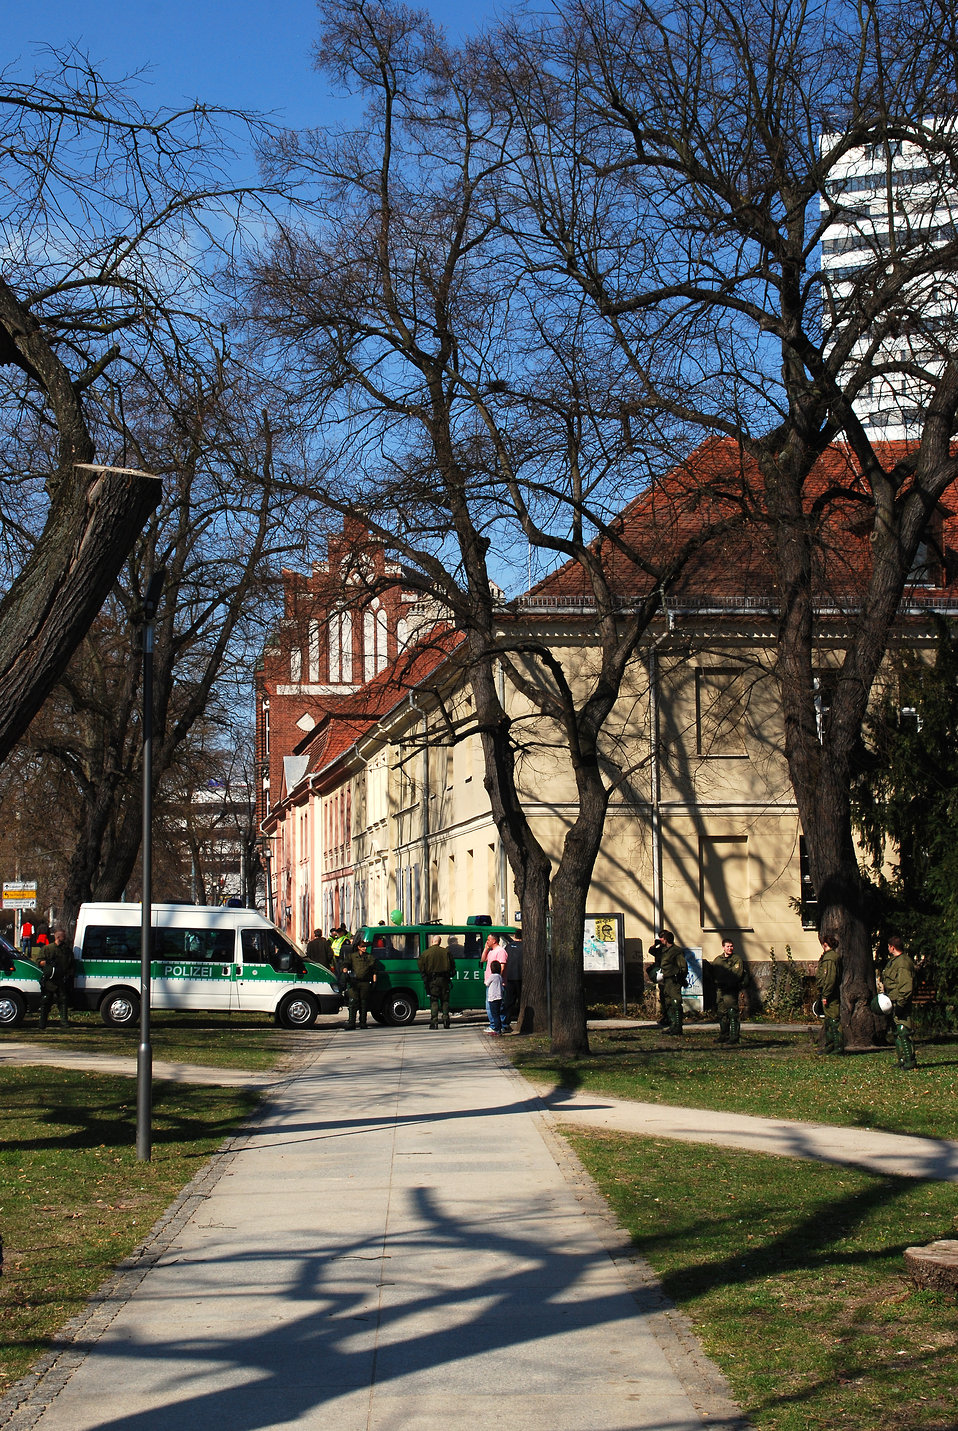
Proteste gegen den Nazi-Aufmarsch am 24.3.2012 in Frankfurt (Oder)